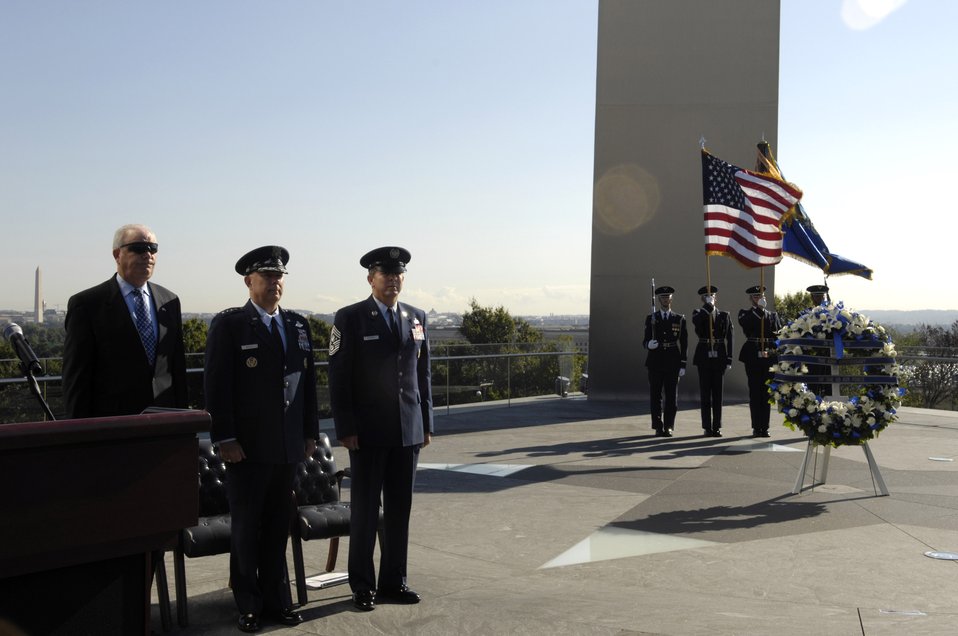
Air Force leaders gather at memorial for anniversary

Secretary of the Air Force Michael W. Wynne, Air Force Chief of Staff Gen. T. Michael Moseley and Chief Master Sgt. of the Air Force Rodney J. McKinley stand at attention during the wreath-laying ceremony Sept. 18 at the Air Force Memorial in Arlington, Va., in honor of the 60th anniversary of the Air Force.